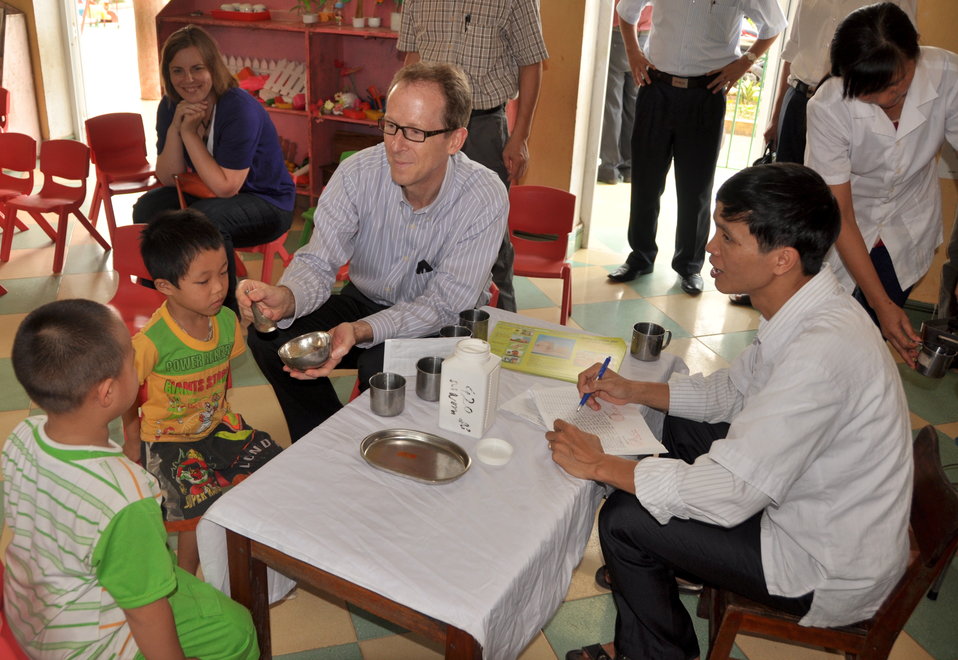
USAID Delivers Deworming Medication to Kindergartners in Nam Dinh Province

USAID Mission Director Joakim Parker gives a dose of deworming medicine to kindergarten children in Nam Dinh Province.

June 1, 2013